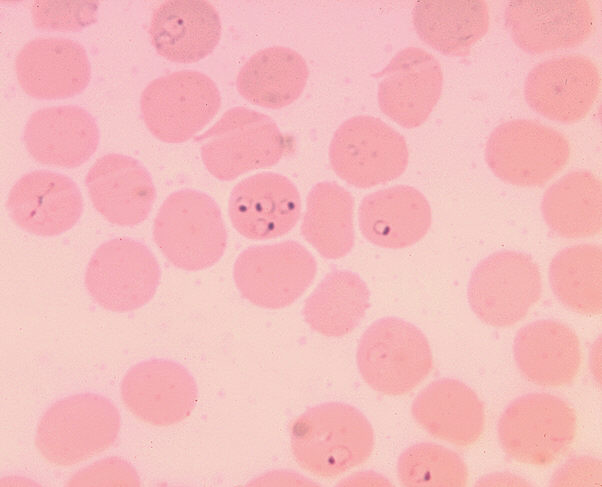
Plasmodium falciparum rings in erythrocytes, blood smear. Parasite.